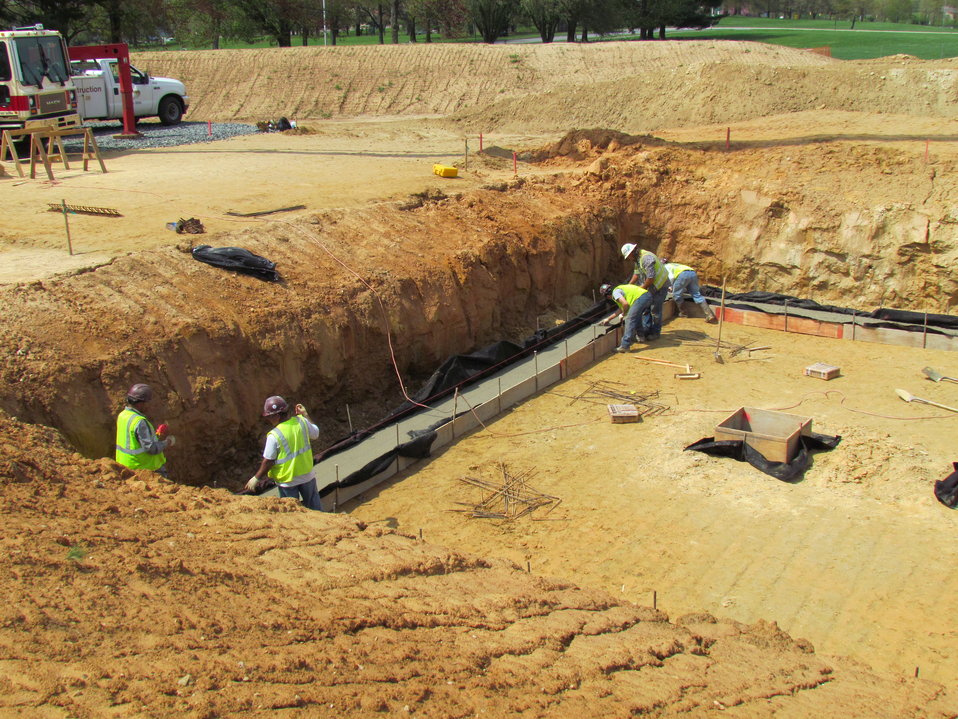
Net-Zero Energy Residential Test Facility - Construction photo showing workman checking foundation to ensure that it is level and built to specifications.